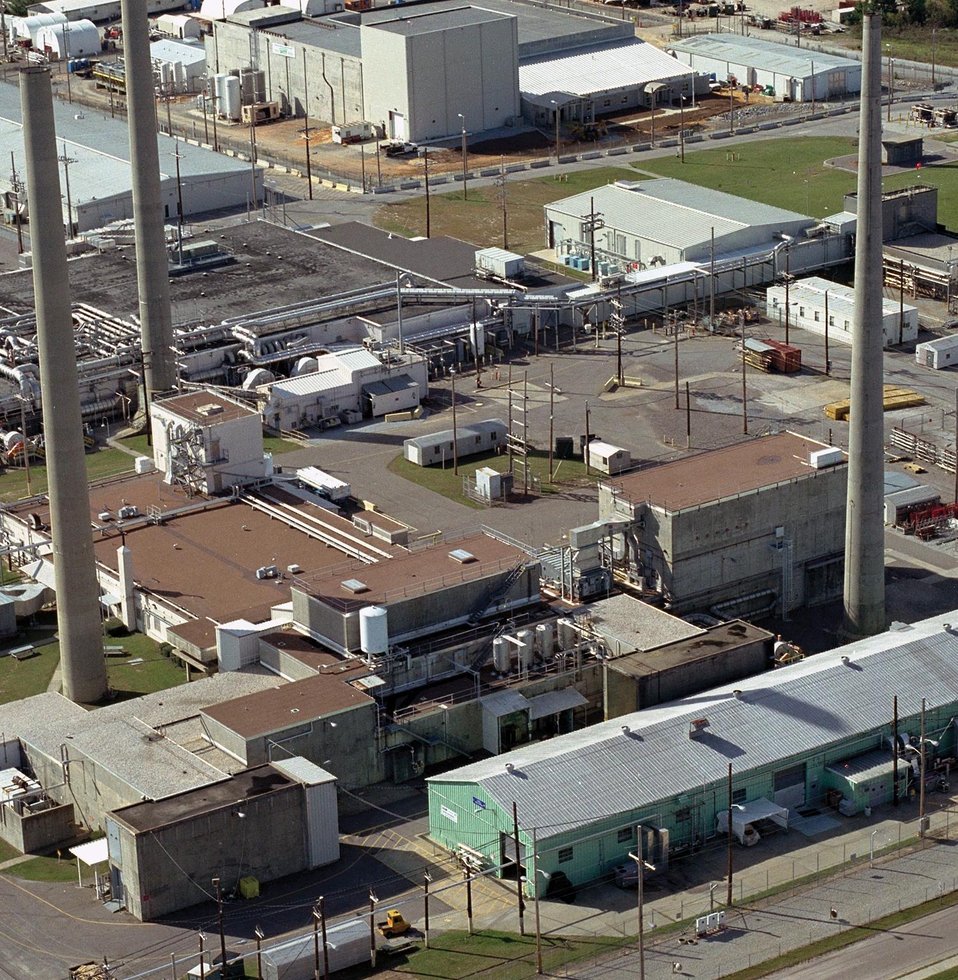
THE CONSOLIDATED SAVANNAH RIVER SITE'S TRITIUM FACILITIES.

THE PURPOSE OF THE TRITIUM FACILITY MODERNIZATION AND CONSOLIDATION (TFM&C) PROJECT IS TO CONSOLIDATE THE TRITIUM PROCESSING AND HANDLING ACTIVITIES, TO IMPROVE SAFETY, REDUCE ENVIRONMENTAL RELEASES, IMPROVE PRODUCTIVITY AND SIGNIFICANTLY REDUCE OPERATING COSTS. THE TFM&C PROJECT INCLUDES THE DEACTIVATION OF THE 232-H BUILDING AND THE CONSTRUCTION OF THE MATERIALS TEST FACILITY, WHICH PERFORMS RESERVOIR SURVEILLANCE OPERATIONS AND TESTS TRITIUM EFFECTS ON MATERIALS.